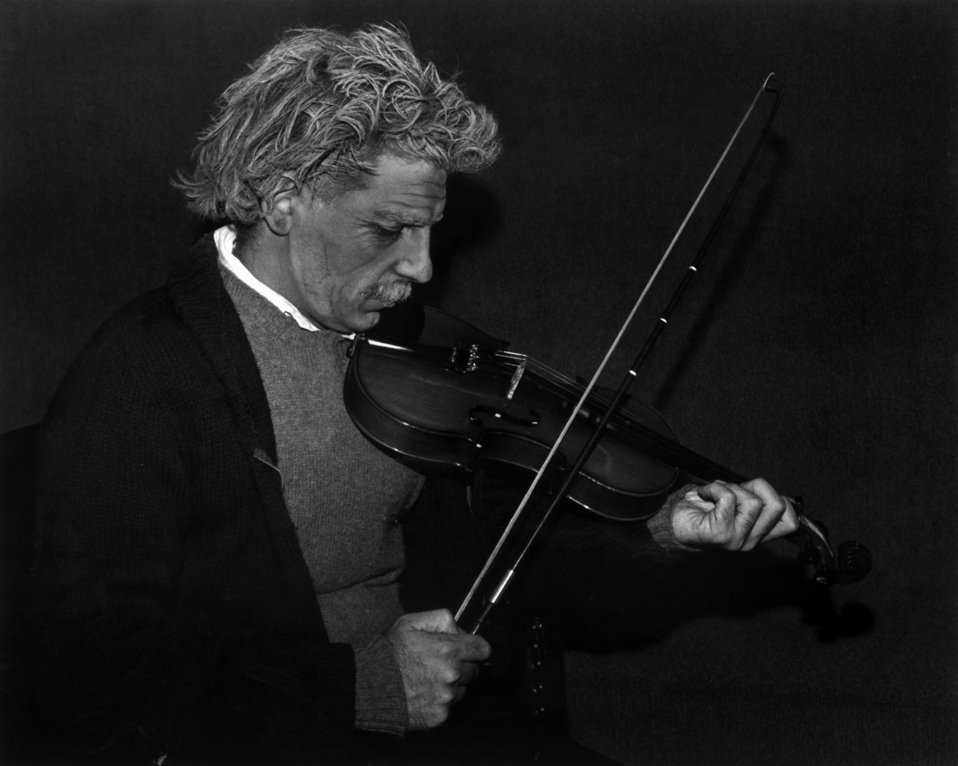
'Einstein: the Man' -- One man show by Bill Landry at American Museum of Science and Energy Oak Ridge

77-386 DOE photo by Frank Hoffman'Einstein: the Man' -- One man show by Bill Landry at American Museum of Science and Energy Oak Ridge Tennessee 9-11-1977